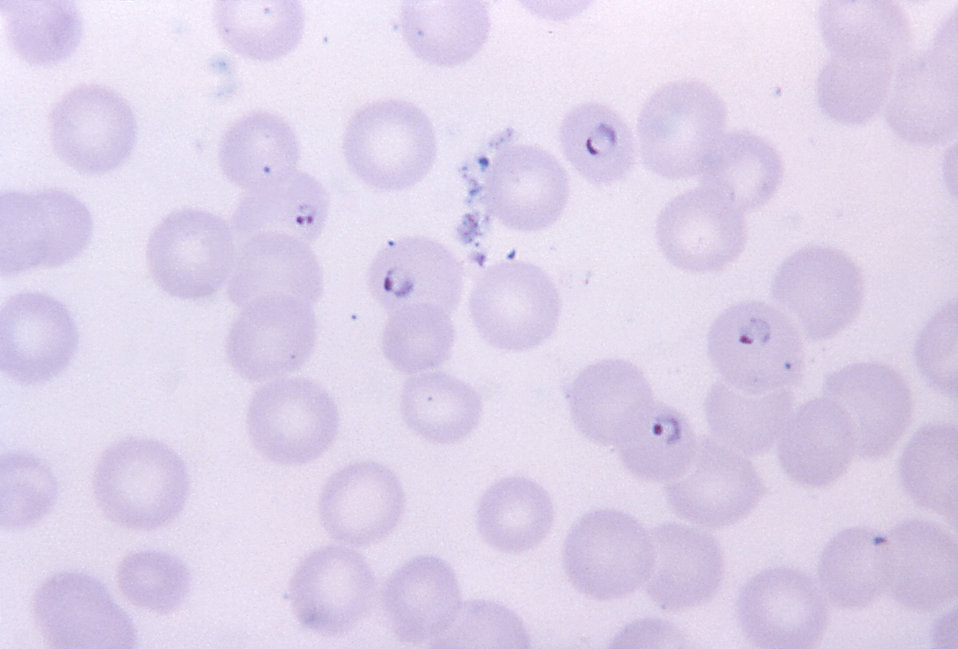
This thin film micrograph reveals five P. falciparum rings; four with one chromatin dot, and one with two chromatin dots.